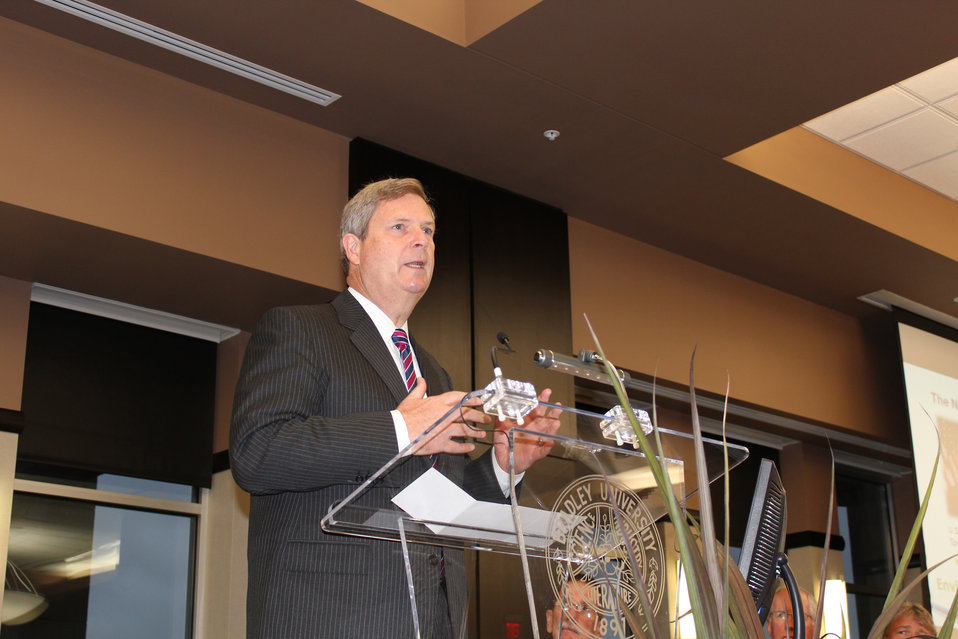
Agriculture Secretary Tom Vilsack keynote speaker at the “Future of Midwest Agriculture and Environmental Sustainability symposium at Bradley University in Peoria, IL, on Thursday, Nov. 3, 2011.